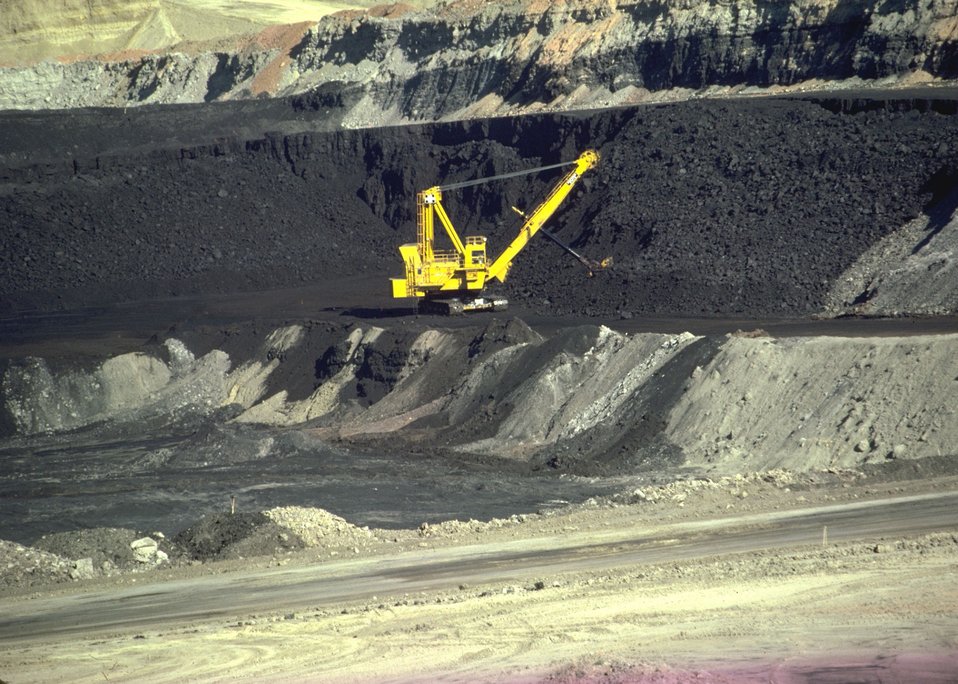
Coal bed methane development.